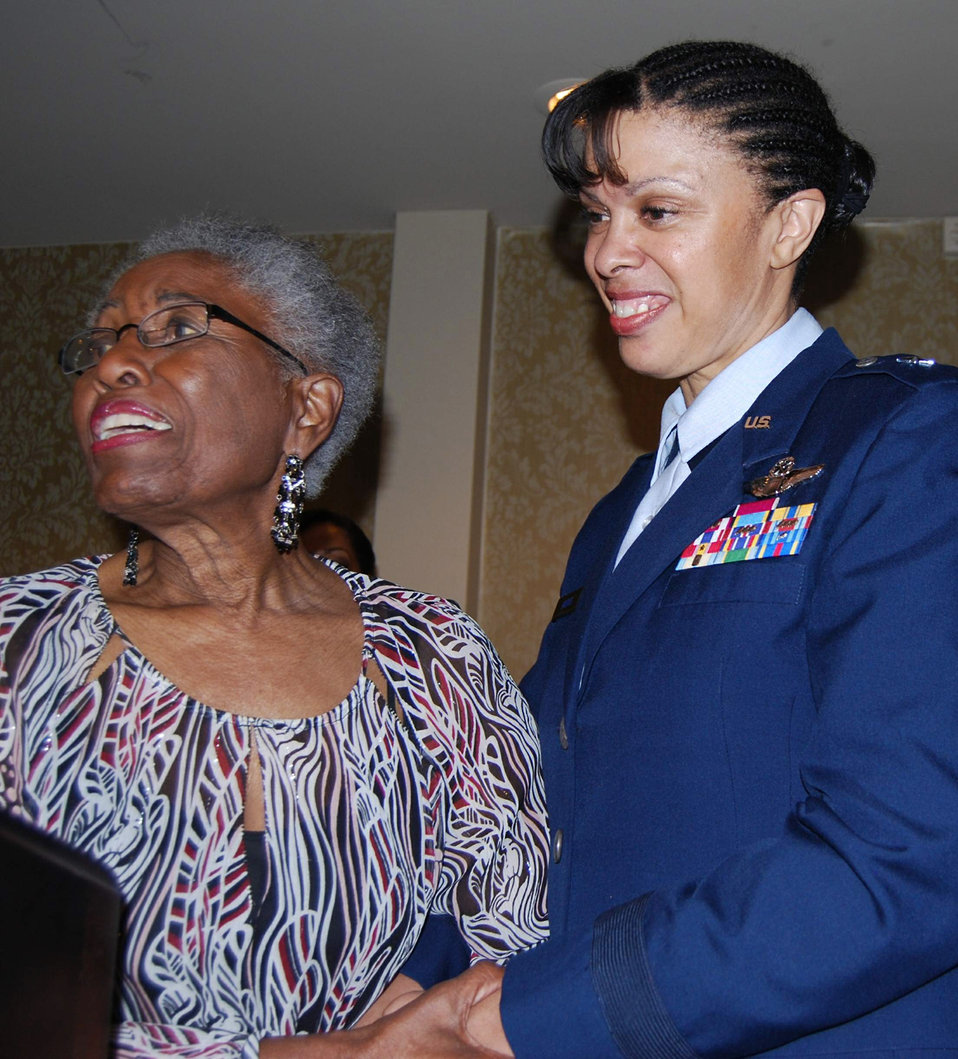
Historic promotion evokes reflection, bridges generations

Retired Maj. Nancy C. Leftenant-Colon addresses the audience with Brig. Gen. Stayce D. Harris during the 38th Annual Tuskegee Airmen, Inc., convention Aug. 7 in Las Vegas. The Air Force's highest ranking black female aviator, General Harris is currently based at the Pentagon as the assistant to the U.S. Africa Command commander. Major Leftenant-Colon is the first black nurse in the Reserve or active duty Army nurse corps.